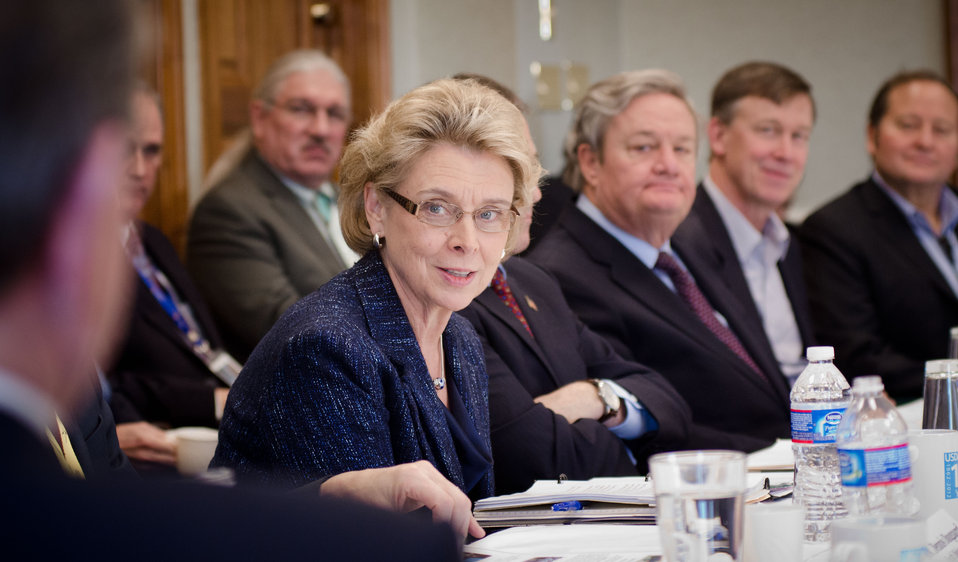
Western Governors Association Chair Washington Governor Chris Gregoire (center) makes a comment during a breakfast for Western Governors and Federal Officials, in the Lincoln Room at the United States Department of Agriculture headquarters, in Washington, D.C., on Sunday, February 26, 2012.